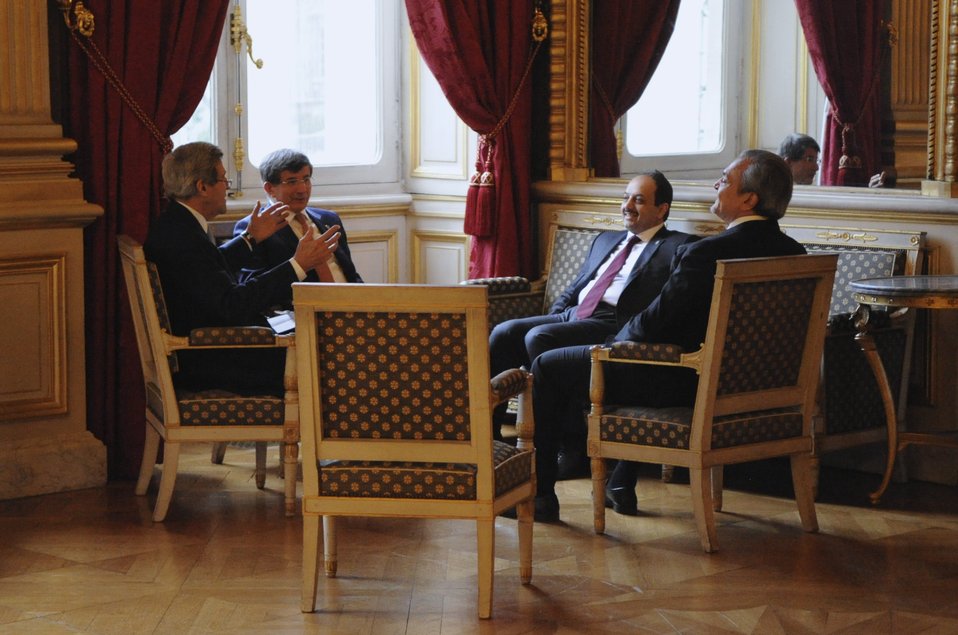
Secretary Kerry Meets Turkish, Qatari, Saudi Foreign Ministers

U.S. Secretary of State John Kerry speaks with fellow Foreign Ministers Ahmet Davutoglu of Turkey, Khalid bin Mohammad al-Attiyah of Qatar, and Crown Prince Saud al-Faisal of Saudi Arabia after a meeting of the London 11 group in Paris, France, on January 12, 2014.